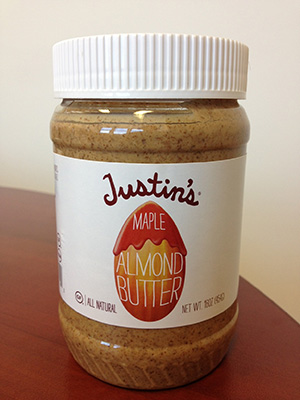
RECALLED - Maple almond butter; Chocolate hazelnut butter

August 16, 2013 – Product Recall – Voluntary Recall of Limited Lots of Maple Almond Butter Jars and Chocolate Hazelnut Butter Jars
.